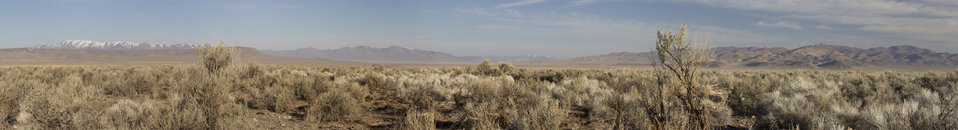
Panoramic View of Sagebrush Habitat, Central Nevada